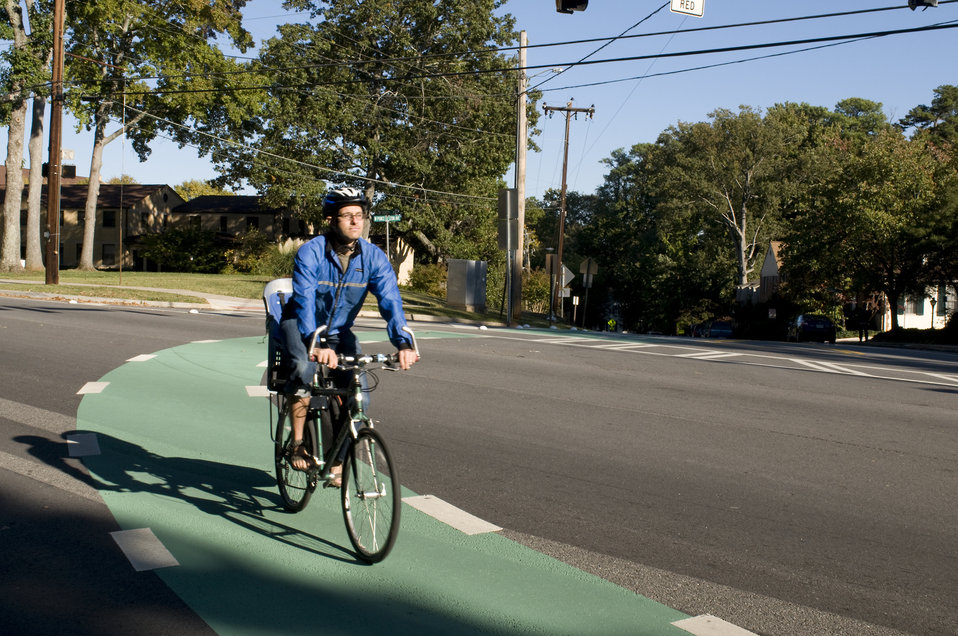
This photograph depicts a male bicyclist, who was riding his bicycle on a sunny Georgia morning. Note the brightly-colored windbreaker she was wearing, which would help drivers see her more easily, as well as the protective, aerodynamic helmet, and the snug leggings, all adding to an overall safer bike ride.